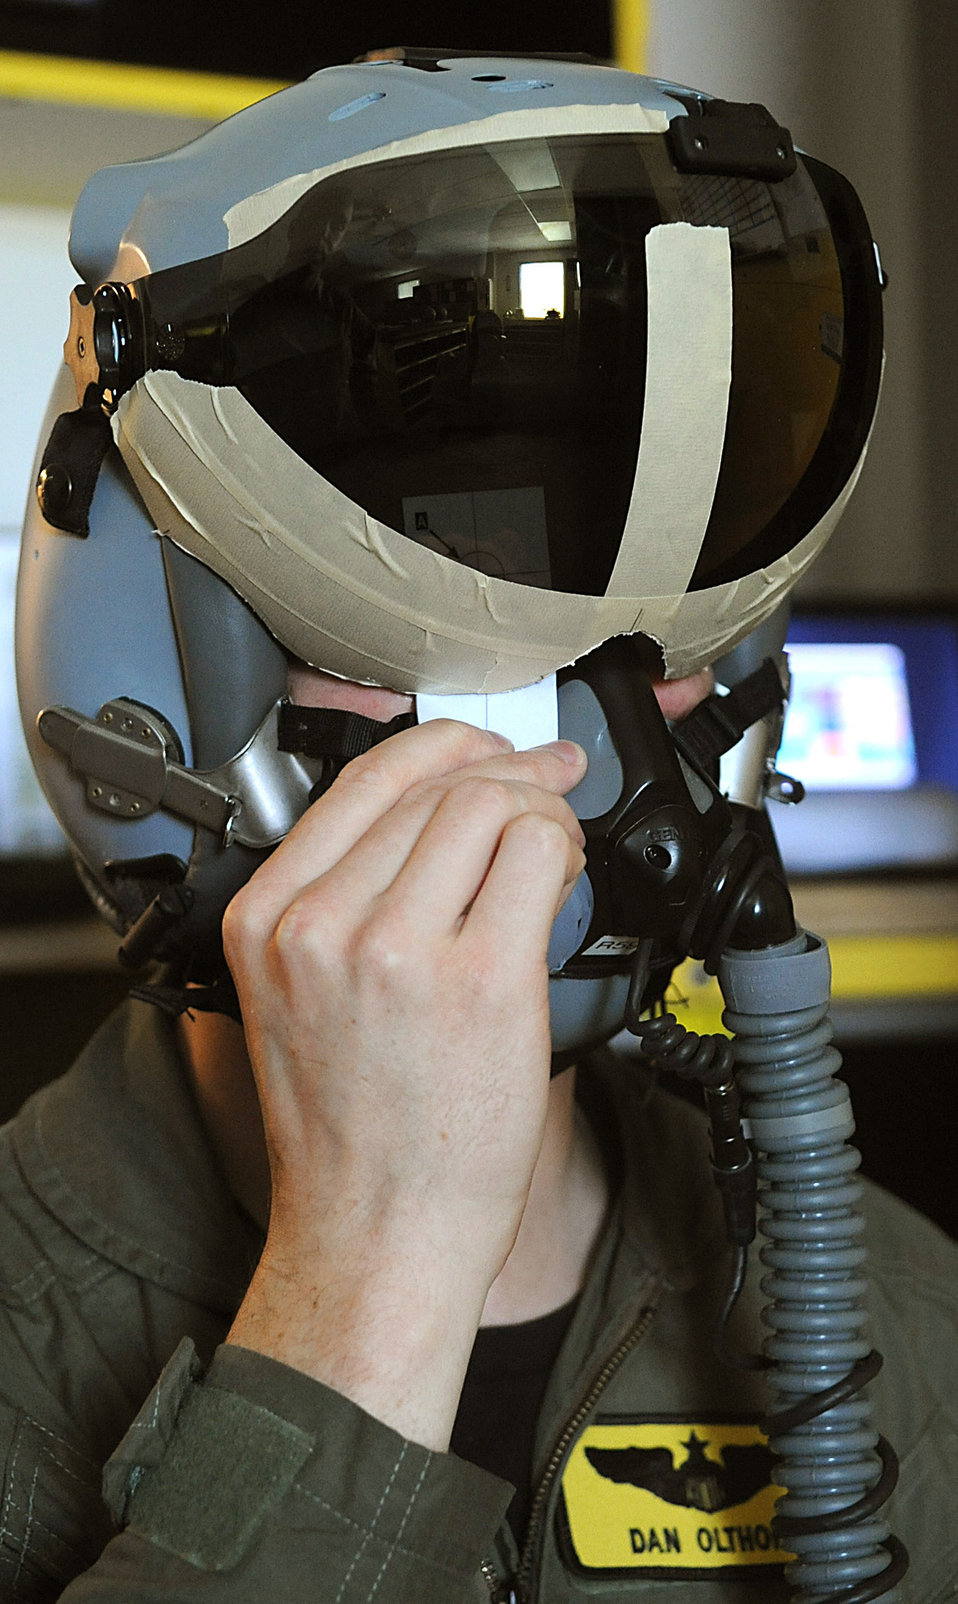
Airmen enhance F-15E capabilities with helmet-mounted cueing system

Capt. Dan Olthoff completes a test that measures the distance between his pupils while wearing a Joint Helmet-Mounted Cueing System Aug. 9, 2010, at Seymour Johnson Air Force Base, N.C. Once measured, an image will display directly over the pilot's pupil on the inside of the visor, highlighting the JHMCS ability to display cueing symbology for navigation, weapons and targeting sensors. Captain Olthoff is a 336th Fighter Squadron F-15E Strike Eagle pilot.